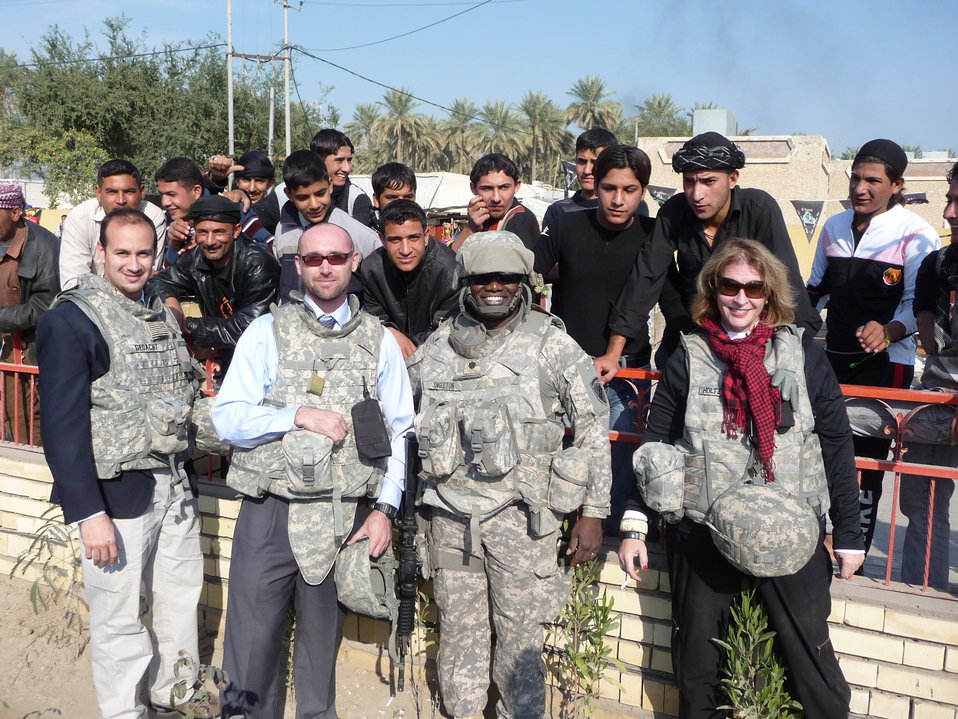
Embassy and PRT Diyala Officials in Aruba Market

Dan Gedacht (U.S. Embassy Baghdad), Mike Rothe (PRT Diyala), LTC Ricardo Singleton (PRT Diyala), and Greta Holtz (U.S. Embassy Baghdad) in Aruba Market, Muqdadiya, Iraq, December 2009.